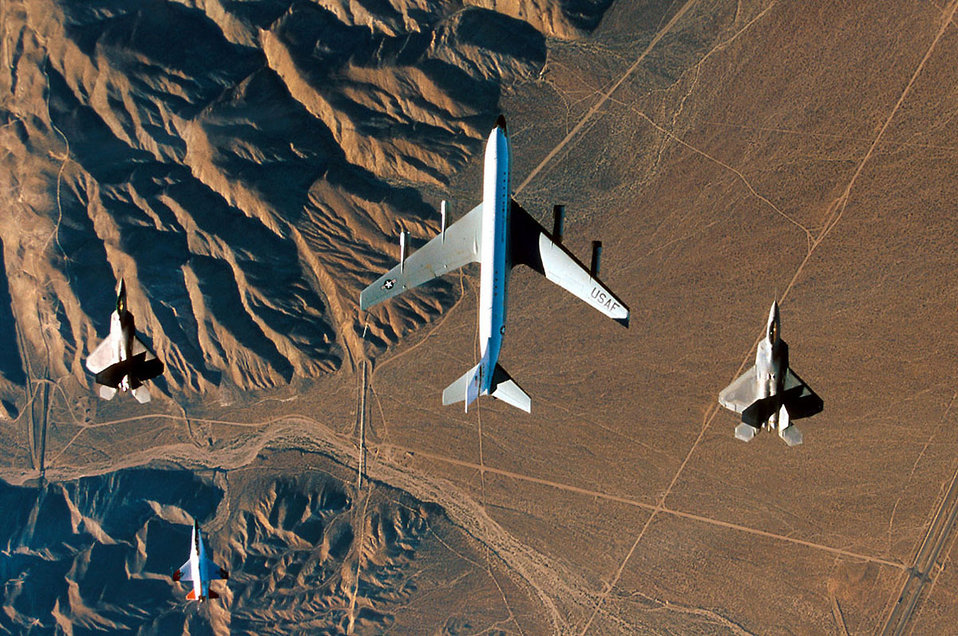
Test flight

EDWARDS AIR FORCE BASE, Calif. -- Two F/A-22 Raptors flank a KC-135 Stratotanker from the 452nd Flight Test Squadron during a test mission over the dry lakebeds. Staying close behind is an F-16 Fighting Falcon chase plane from the 416th Flight Test Squadron.